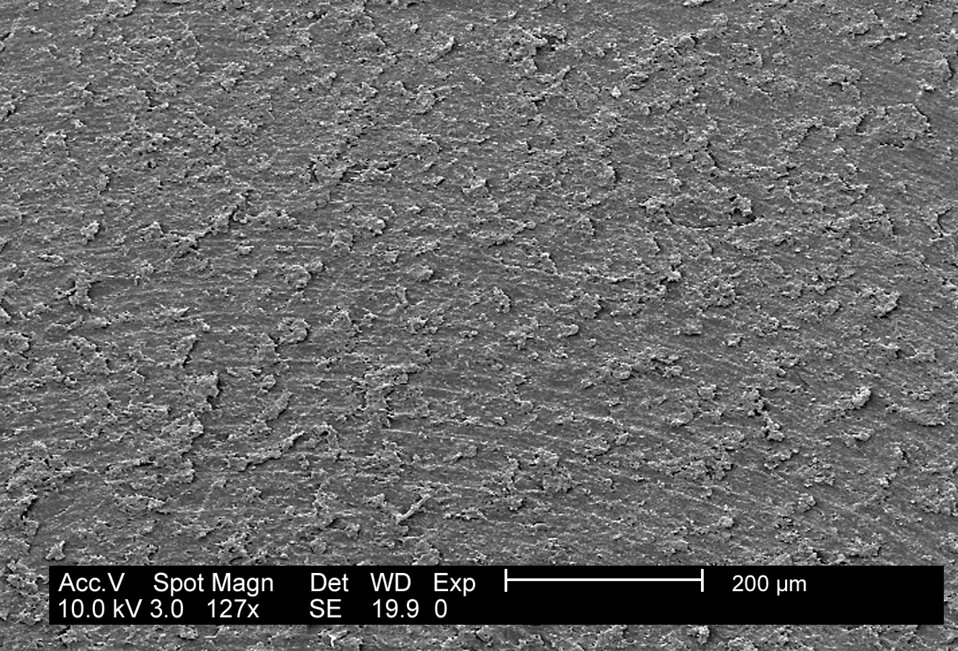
This electron micrograph, viewed at a low magnification depicts the irregularities in the surface of a biofilm culture material.